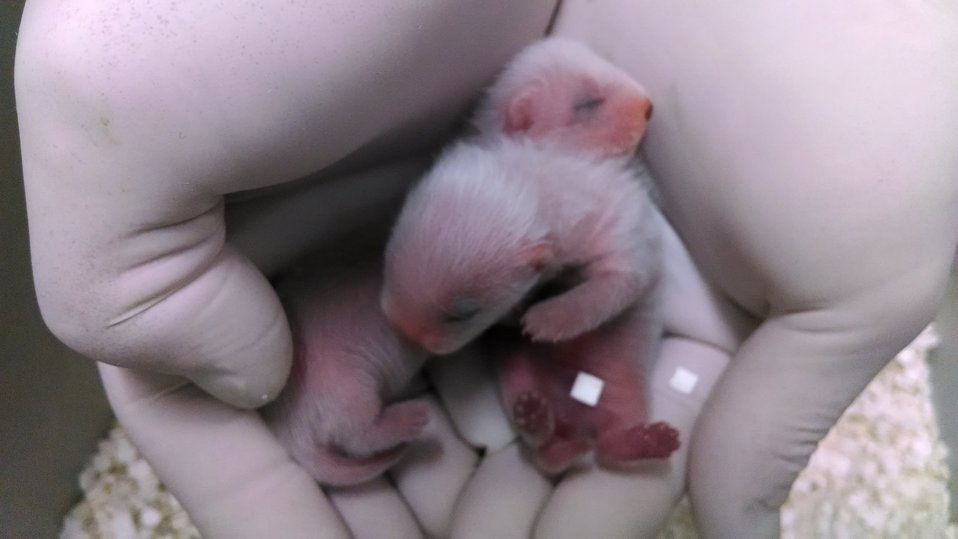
Newborn Black-footed Ferrets

These kits were just one-week-old at the time of this photo (Mid-May, 2014).